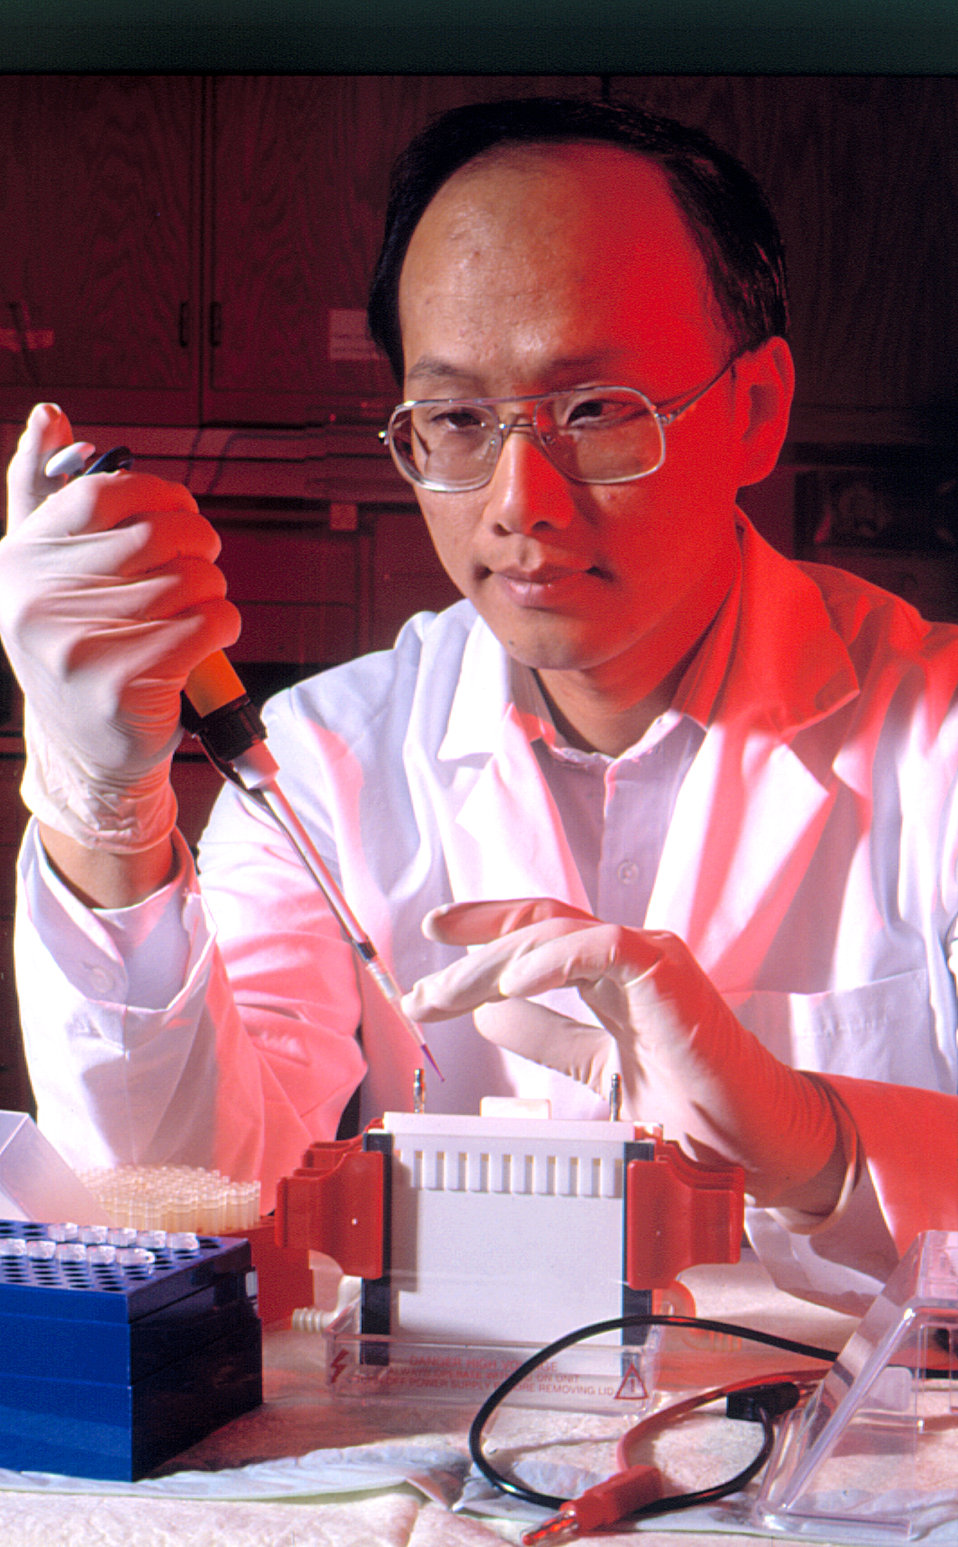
CDC laboratory researcher Chin-Yih Ou.